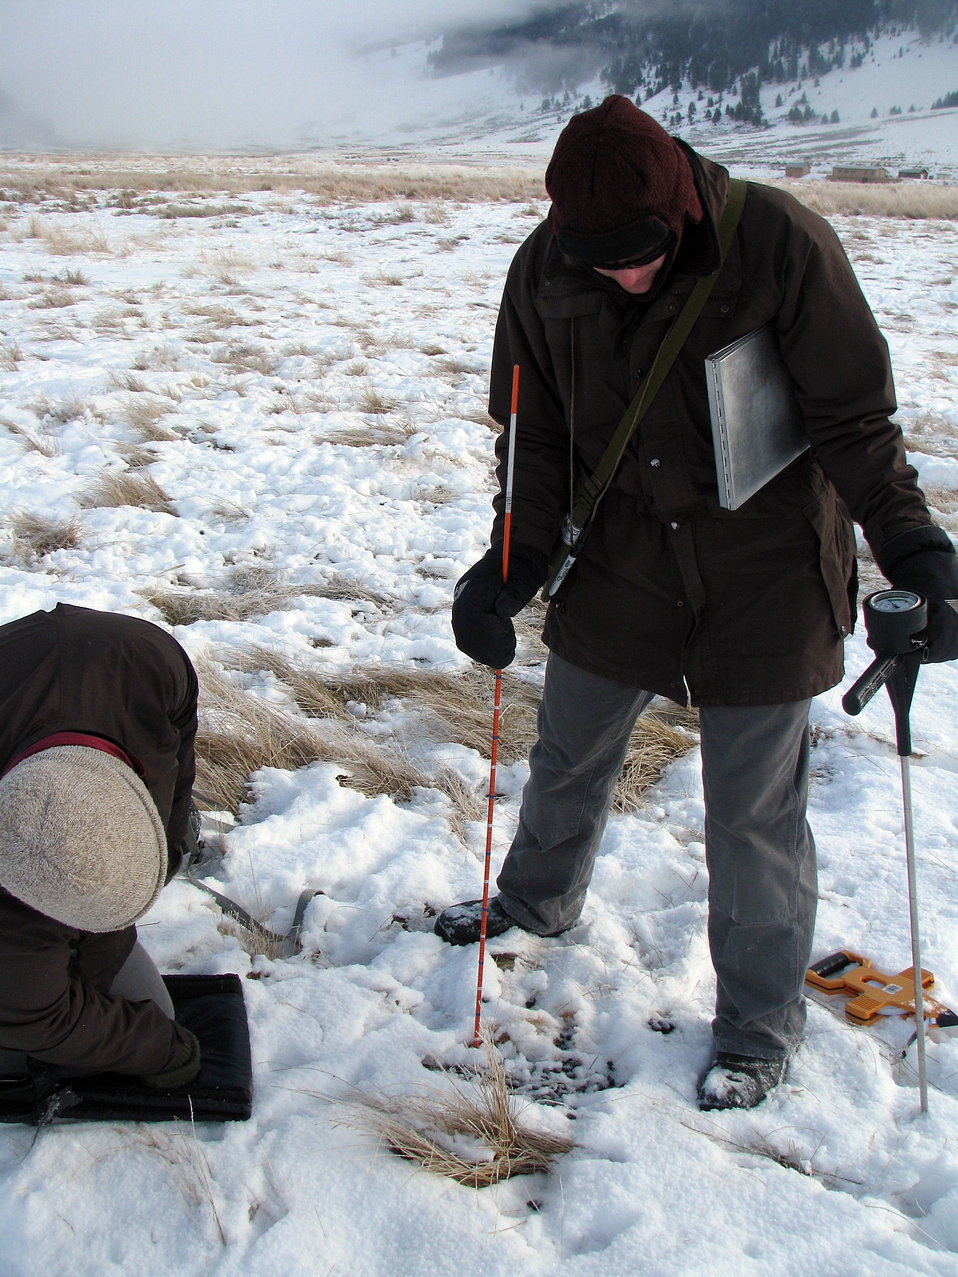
Environmental Sampling at the National Elk Refuge

Lee Jones and Diane Borgreen collect environmental data as part of a multi-year health monitoring study at the National Elk Refuge in Montana.